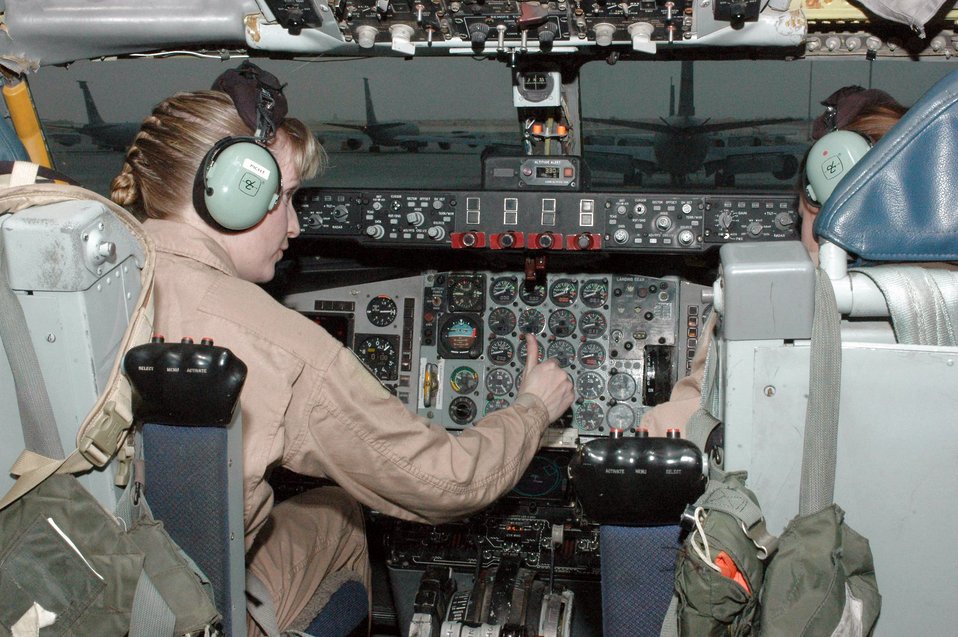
All-female crew completes inflight refueling over Iraq

Maj. Leslie Picht gives the thumbs up to 1st Lt. Cindy Dawson during pre-flight checks March 17 at a Southwest Asia air base. Major Picht was part of a three-woman crew who flew a nighttime air refueling sortie over Iraq March 17-18 in commemoration of National Women's History Month. Major Picht is a KC-135 Stratotanker commander deployed with the 340th Expeditionary Airlift Squadron from Fairchild Air Force Base, Wash. Lieutenant Dawson is a 340th EARS co-pilot deployed to Southwest Asia from McConnell Air Force Base, Kansas.